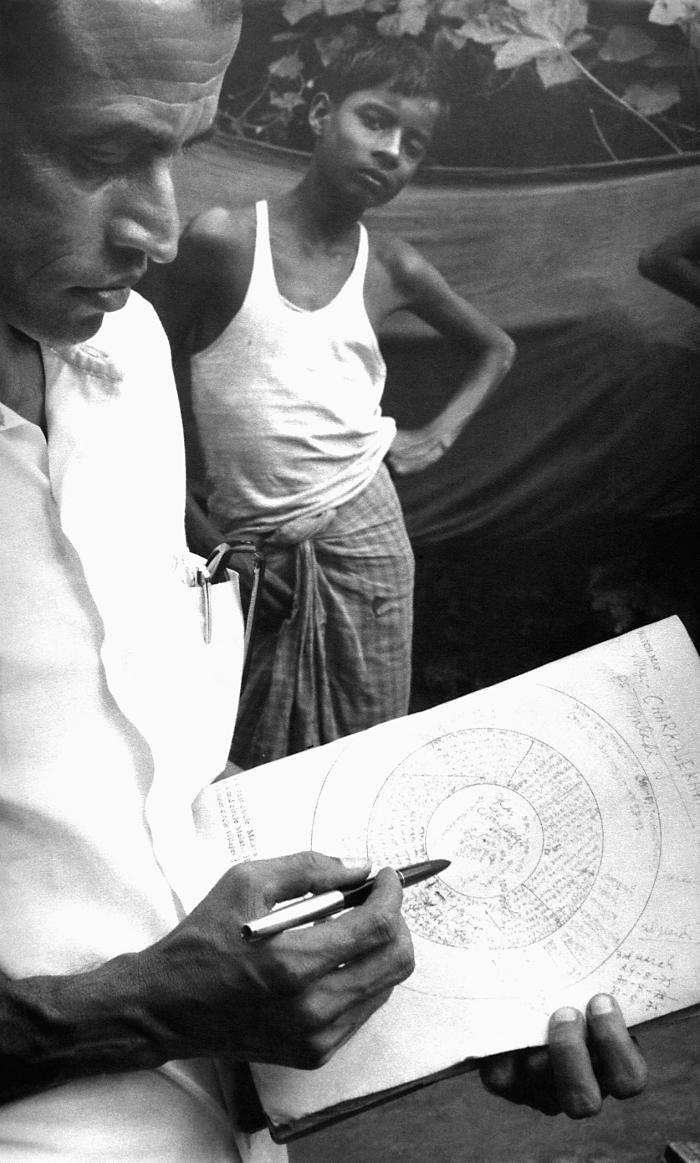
Maps were integral to achieving a successful smallpox eradication campaign outcome, for it enabled public health practitioners, and local volunteers to track smallpox cases once discovered, and inhabitants who'd been in contact with such cases using epidemiologically sound science. There were different types of maps that arose during the process, and this 'Containment map' was created using what is termed a 'circular mapping' technique. It was used when charting a house to house search throughout a community, and discovering a confirmed smallpox case.